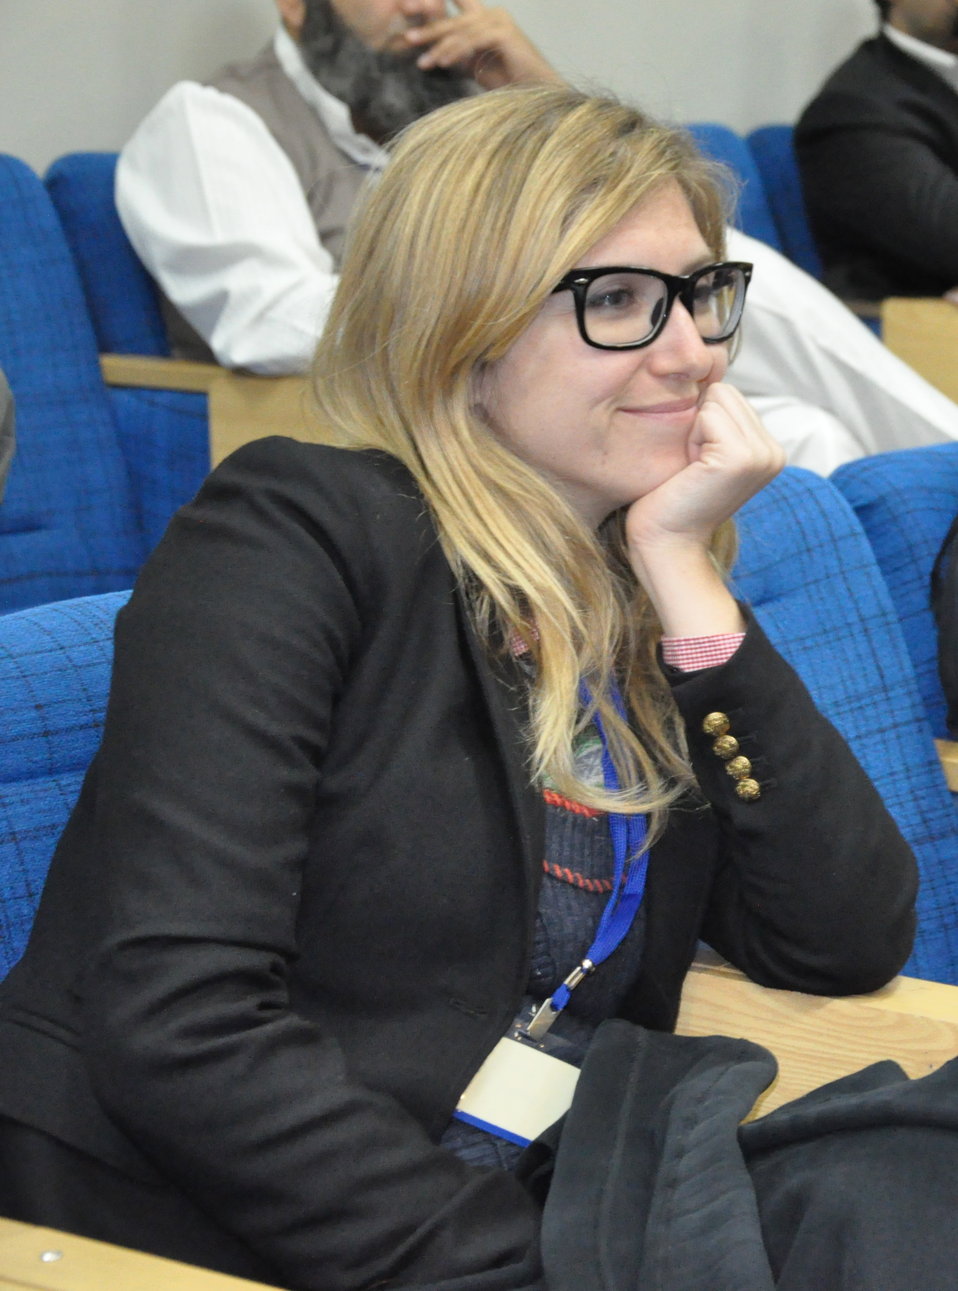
Delegate Marie Leznicki from the Bridge International Academies, Kenya